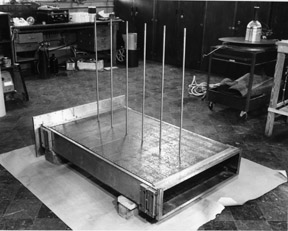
A section of a developmental model of vacuum chamber using 'sky hooks'. This technique was abandoned. c. 1950